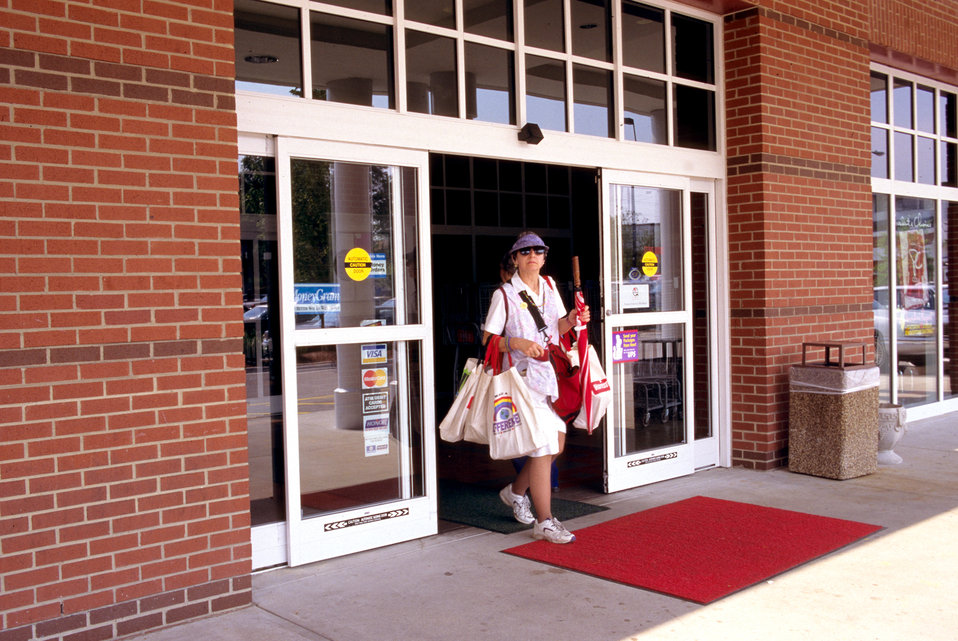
With her hands full, this 1996 image depicted a woman departing a grocery store carrying multiple grocery bags, as well as her personal belongings. Had there have been a door handle with which she'd have to contend, her exit would have been hampered, and made much more complicated. Widely used, 'no-touch' automatic doors accommodate all types of users, including the mobility-challenged, as well as those whose hands are filled with purchases. Simple, and in common use, the wide automatic door is an excellent example of Universal Design. Other facilities should, where possible, consider this option.